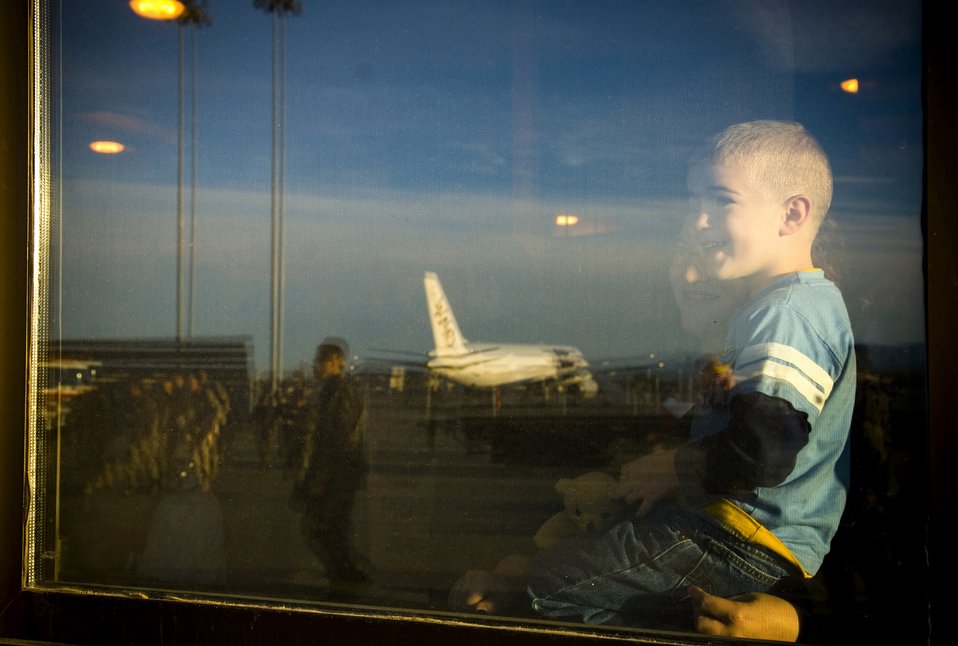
Affectionate homecoming

Garrison Veith, held in the arms of his mother, Jessica Veith, smiles after spotting his father among 40 other Airmen returning home to their friends and families from their deployed locations Sept. 17 to Elmendorf Air Force Base, Alaska. The Airmen returned to loved ones awaiting their arival at the joint military complex.